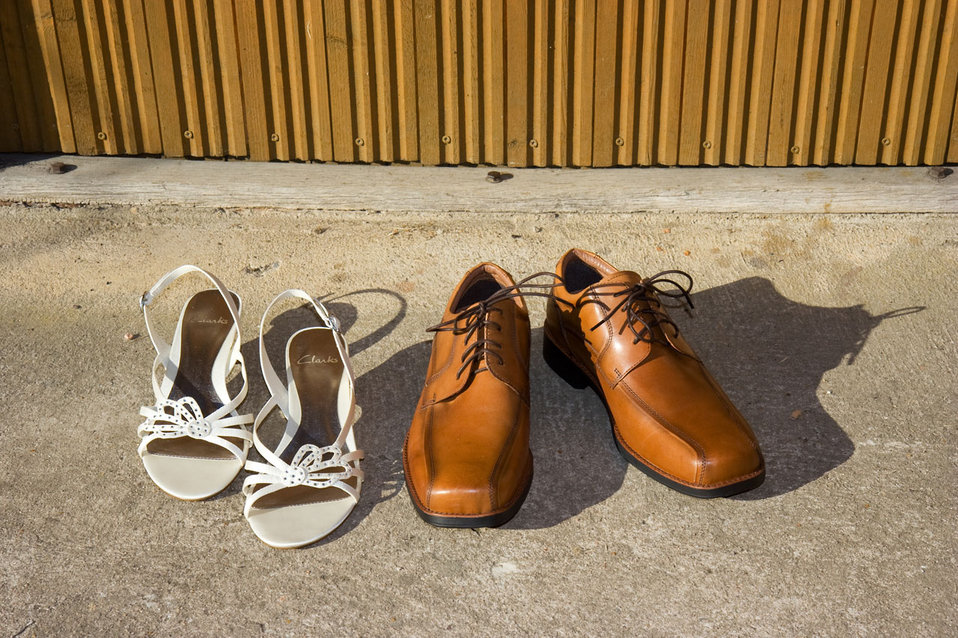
Wedding shoes

Bride and groom wedding shoes.